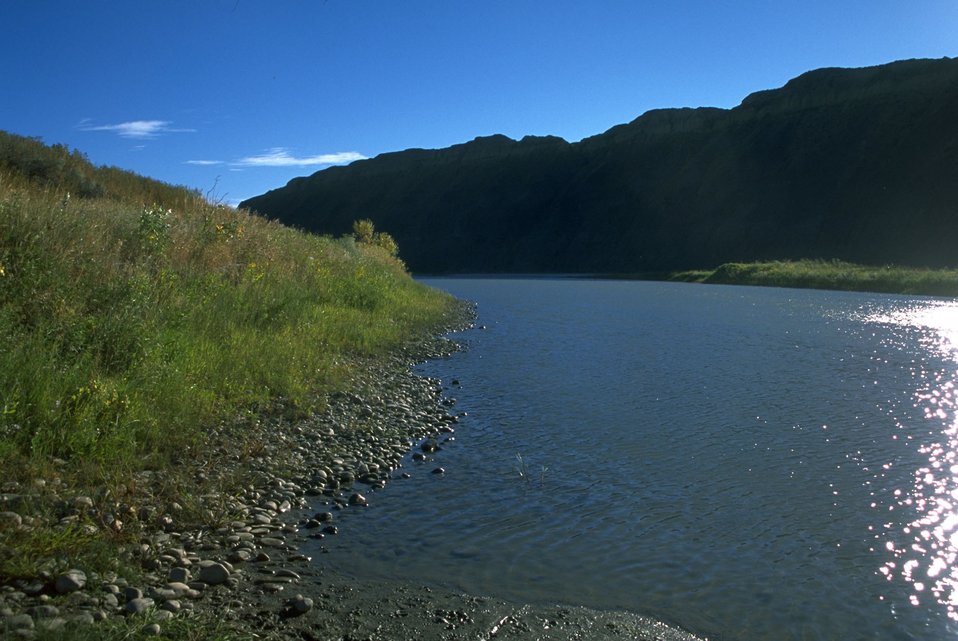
Missouri River near Fort Benton